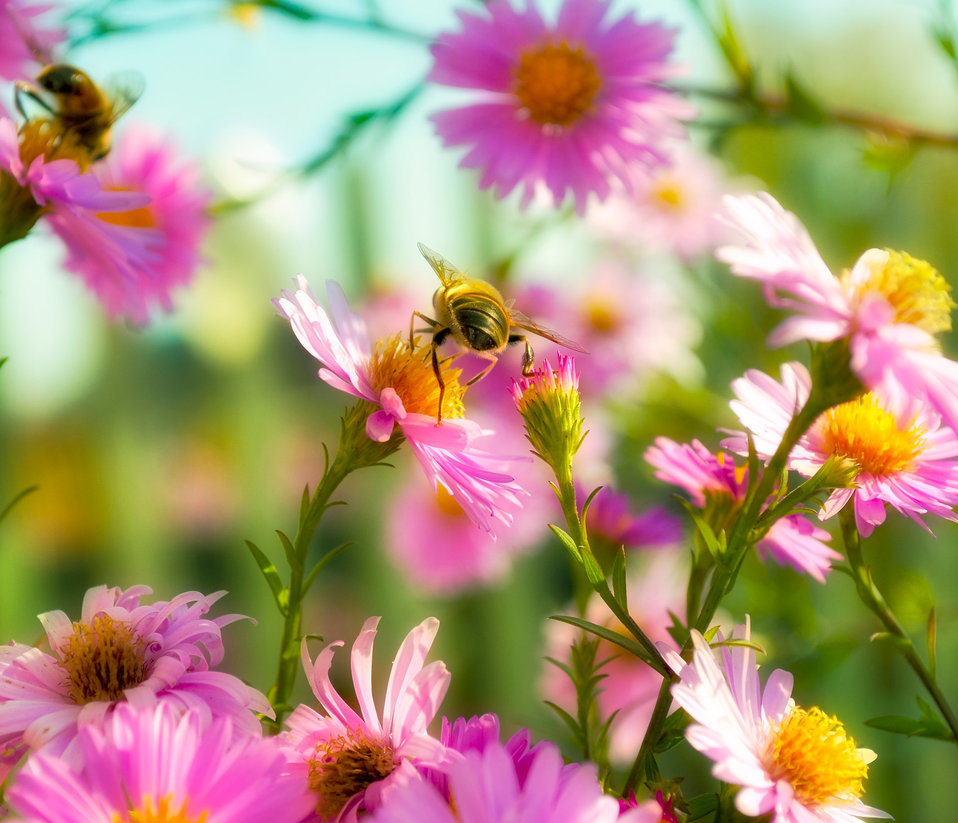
Floral background

Beautiful summer background with flowers and insects..